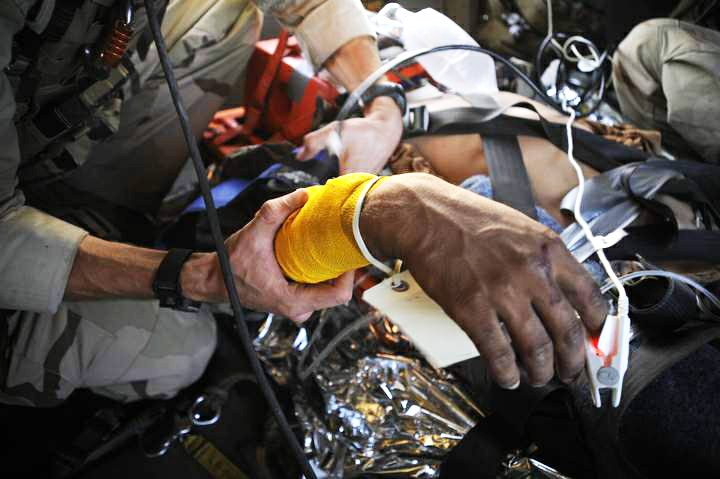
USAF rescue aids in 'Golden Hour' recovery of coalition forces.

Pararescuemen from the 129th Expeditionary Rescue Squadron care for a wounded Afghan National Army soldier aboard an HH-60G Pave Hawk over the Hemland Province, Afghanistan, June 27. Pararescuemen are trained paramedics who provide care to the injured sevicemembers until they can be safely delivered to a hospital.